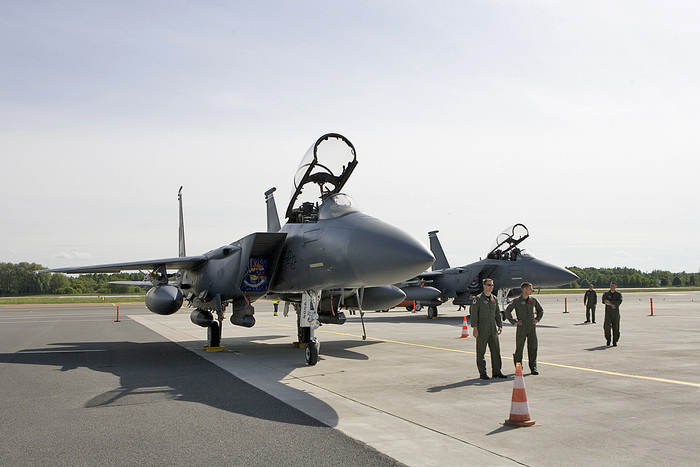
Airmen participate in Unified Engagement 2010

F-15E Strike Eagles sit on the ramp at the Tallinn airport following a combined exercise between USAFE aircraft and Estonian joint terminal attack controllers prior to the start of Unified Engagement 2010, June 7, 2010 in Tallinn, Estonia. U.S. Air Forces in Europe officials joined representatives from seven other countries to participate in the Unified Engagement seminar, which continues through June 11, 2010. The seminar is the fourth Building Partnership Seminar USAFE officials have conducted with European partners as a transformation war game to explore future combined warfighting concepts and capabilities. The F-15s are from Royal Air Force Lakenheath, England.